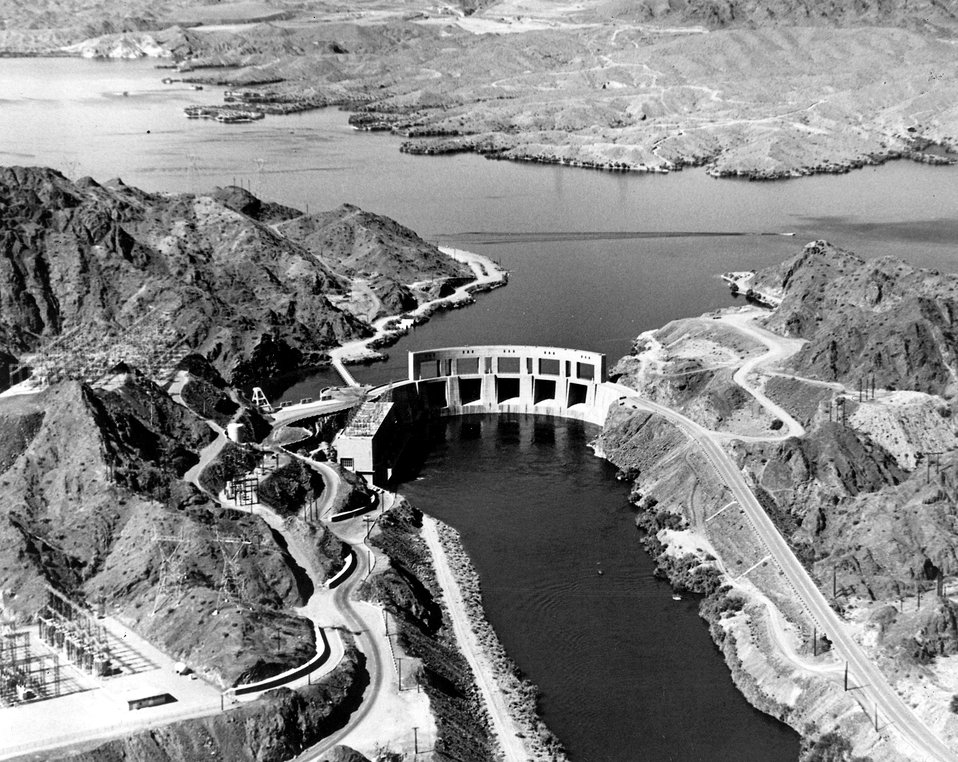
An aerial view of Parker Dam and Lake Havasu, located on the Colorado River 17 miles north of Parker, Arizona. c. 1980